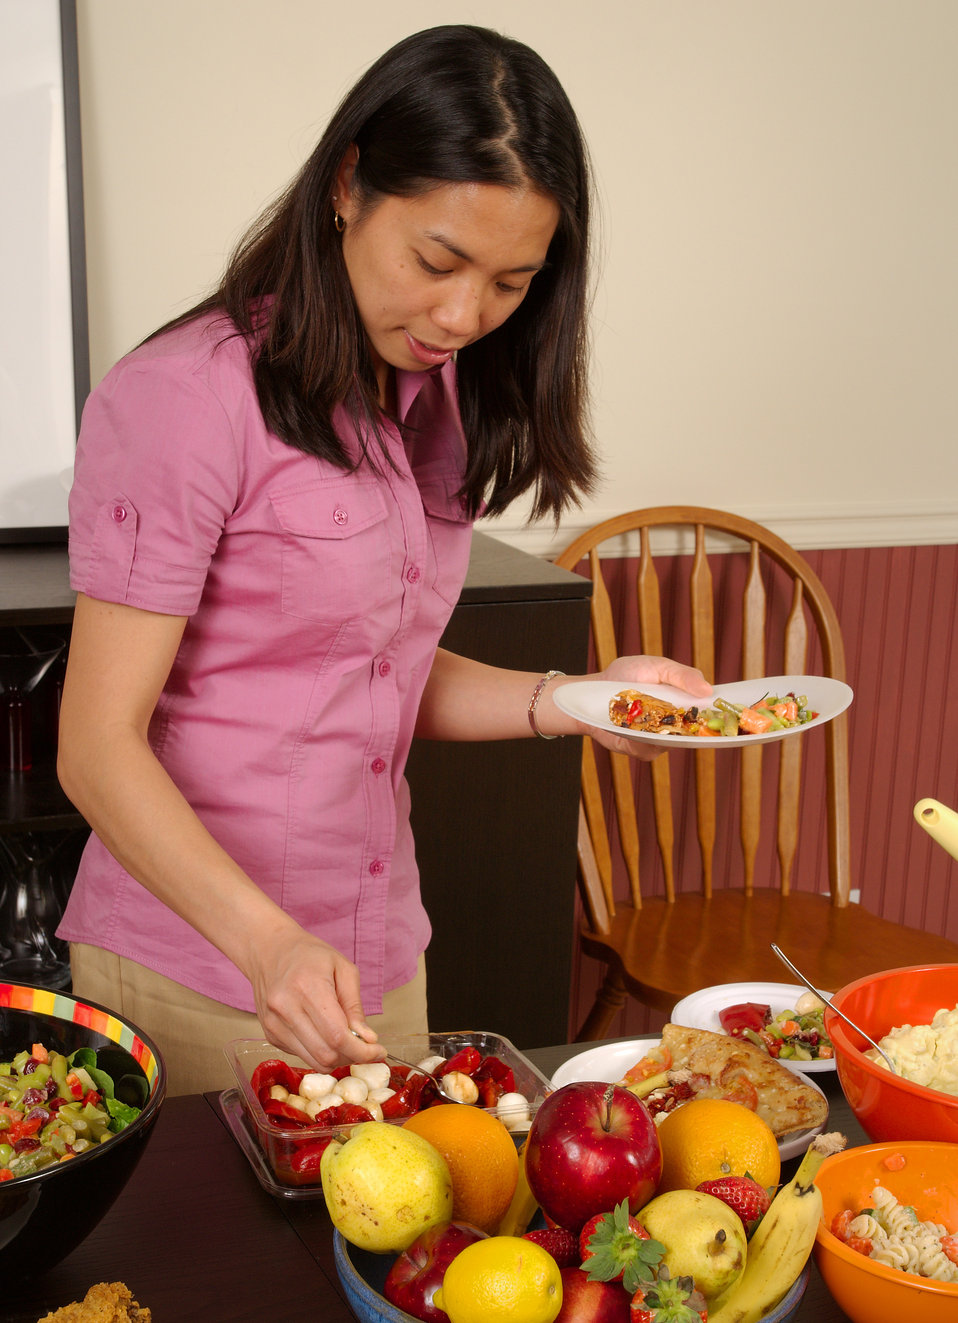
This image depicts a young woman serving herself from a dining table, atop which was plated a large quantity of foods representing a number of different food groups: grains, fruits, vegetables, milk products, meats/poultry/fish, and nuts/seeds/legumes. Here, she was about to add what appears to be some roasted pepper and onion marinade to her plate.